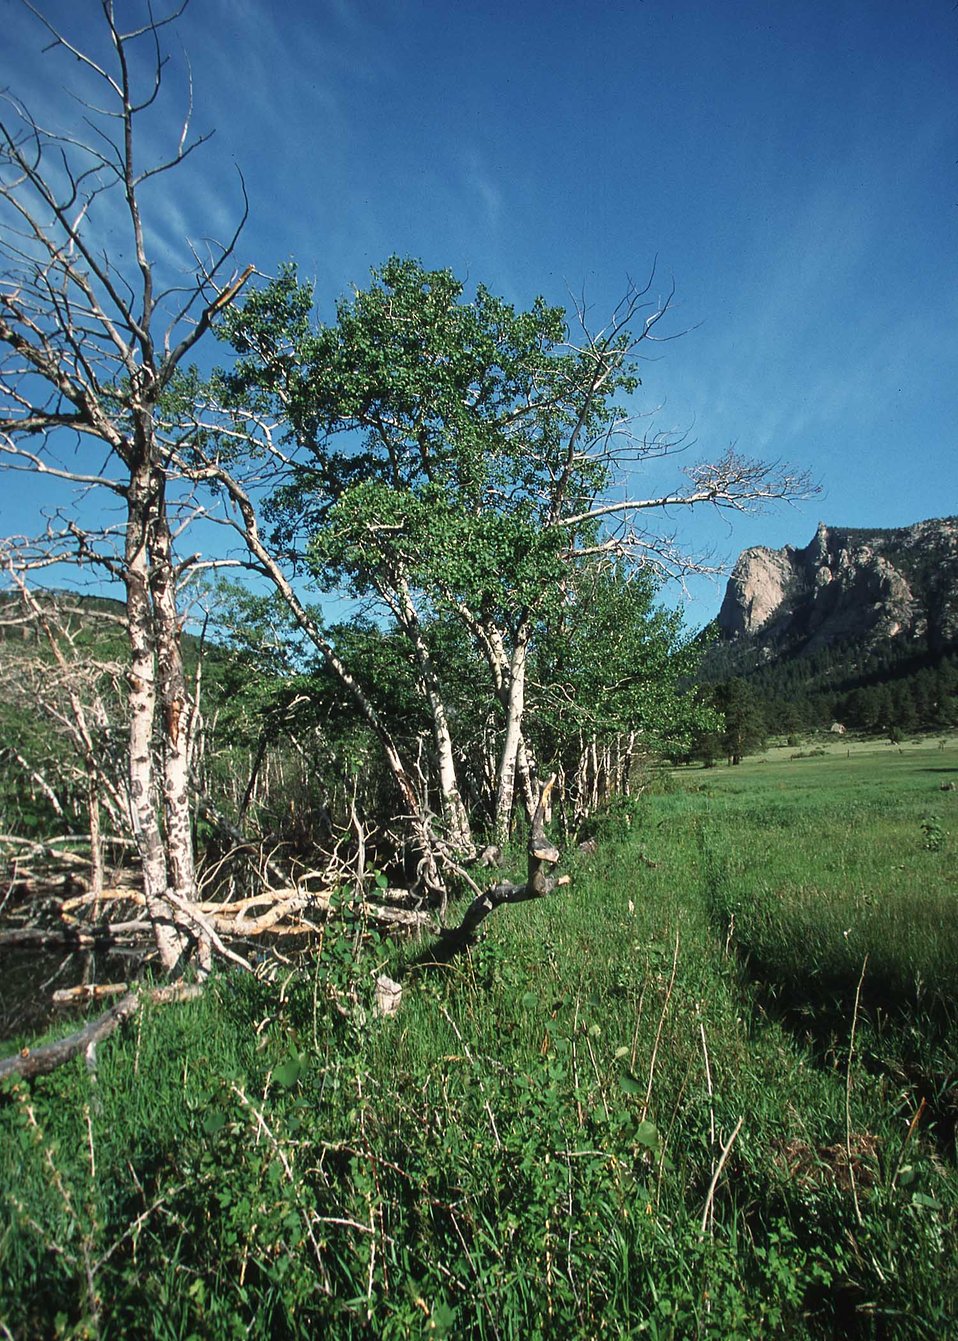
Riparian Pasture on McGregor Ranch, near RMNP.